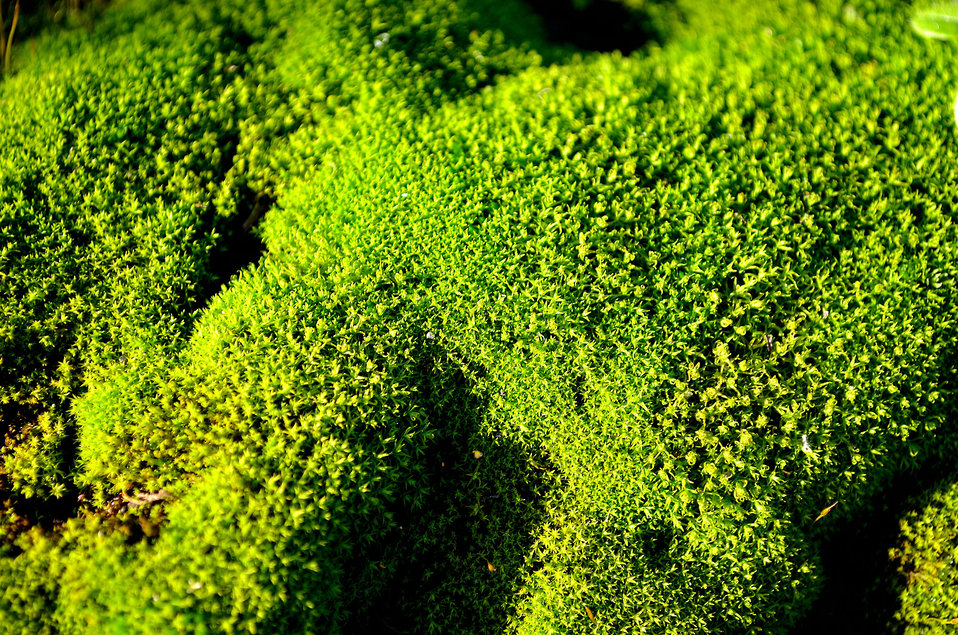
Green moss macro.